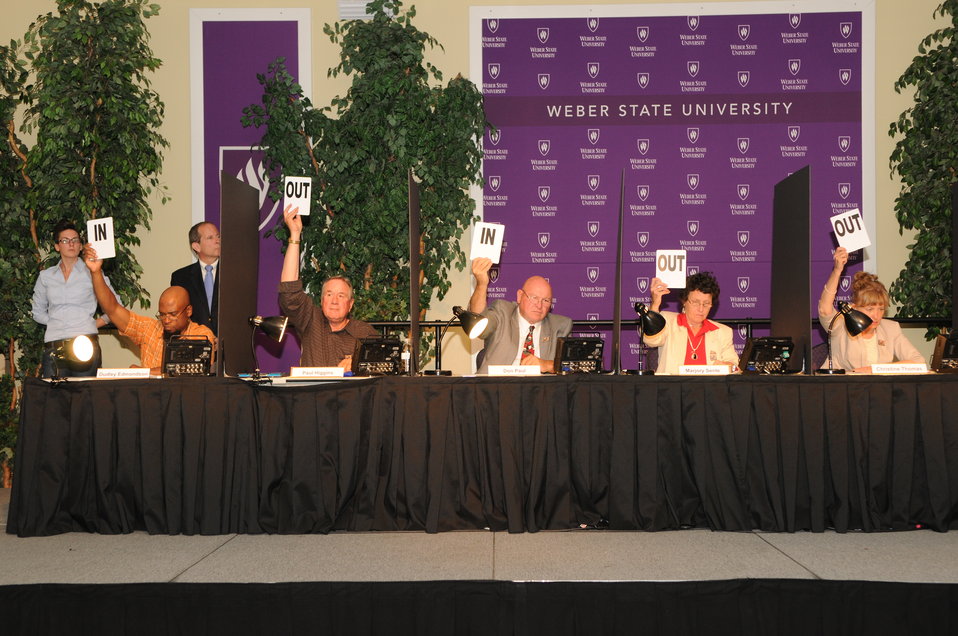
Judging

The U.S. Fish & Wildlife Service sponsored the 2012 Federal Duck Stamp Art Contest September 28 and 29 in Ogden, Utah, at Weber State University. A panel of five judges was responsible for choosing the art work used to design the 2013-2014 Migratory Bird Hunting and Conservation Stamp.